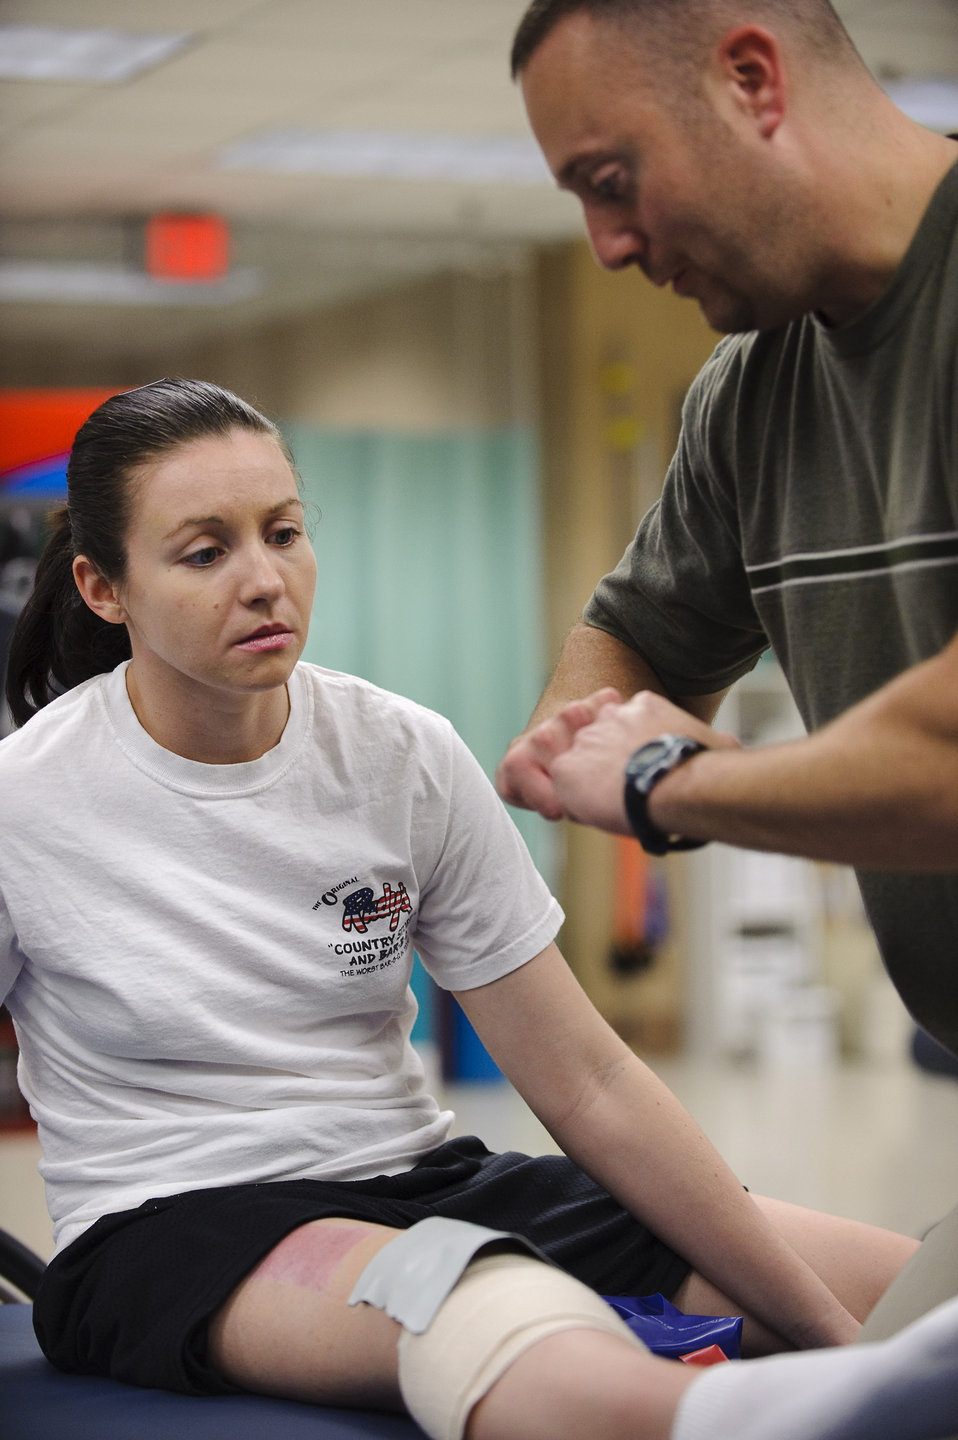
Captain, family reflect on blessings

Physical therapy assistant John Inzinna (r) demonstrates the proper function of a knee joint to Capt. Wendy Koseka 19th Airlift Wing legal officer during her physical therapy session at Brook Army Medical Center?s outpatient physical therapy clinic.